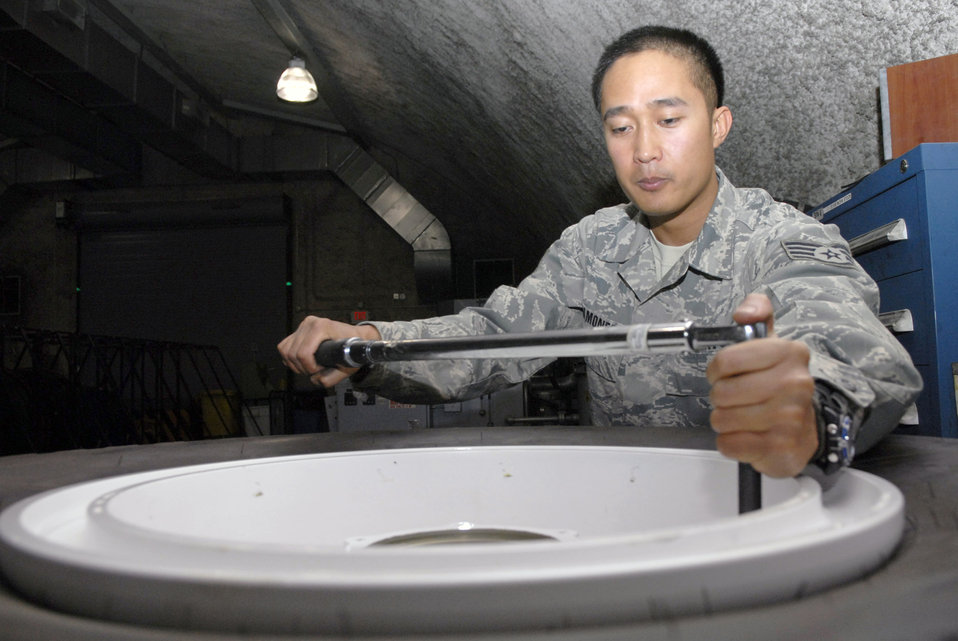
Wheel and tire shop rolls on

At an air base in Southwest Asia, Staff Sgt. Ruben Ramones tightens bolts on a C-130 Hercules wheel with a torque wrench. The base wheel and tire shop supports eight forward operating locations and seven different types of aircraft with a full range of wheel and tire services. Sergeant Ramones is the wheel and tire shift lead for the 379th Expeditionary Maintenance Squadron, and hails from Sacramento, Calif.